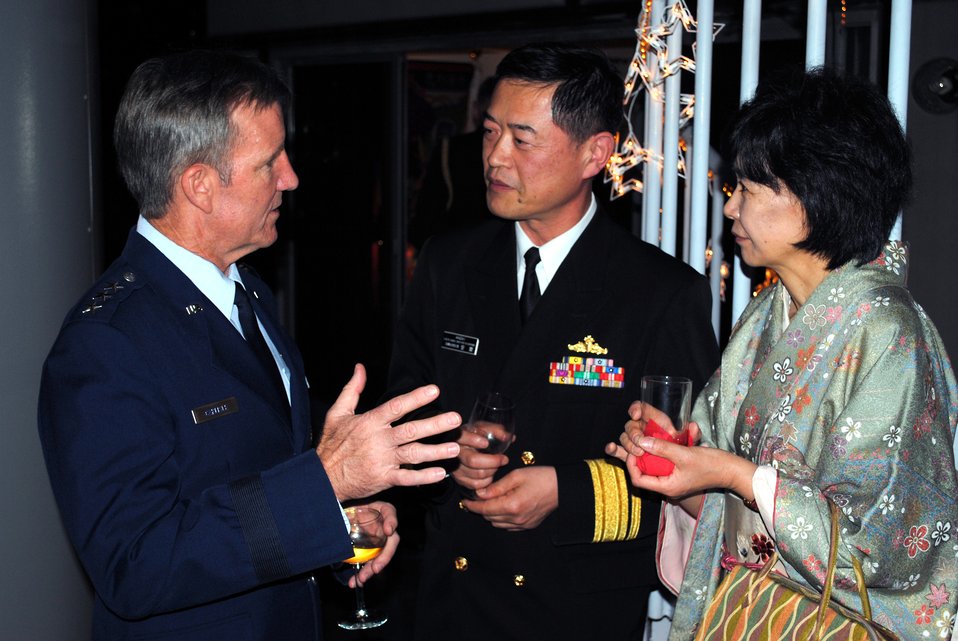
U.S., Japan forces celebrate as alliance reaches half-century mark

Lt. Gen. Herbert J.